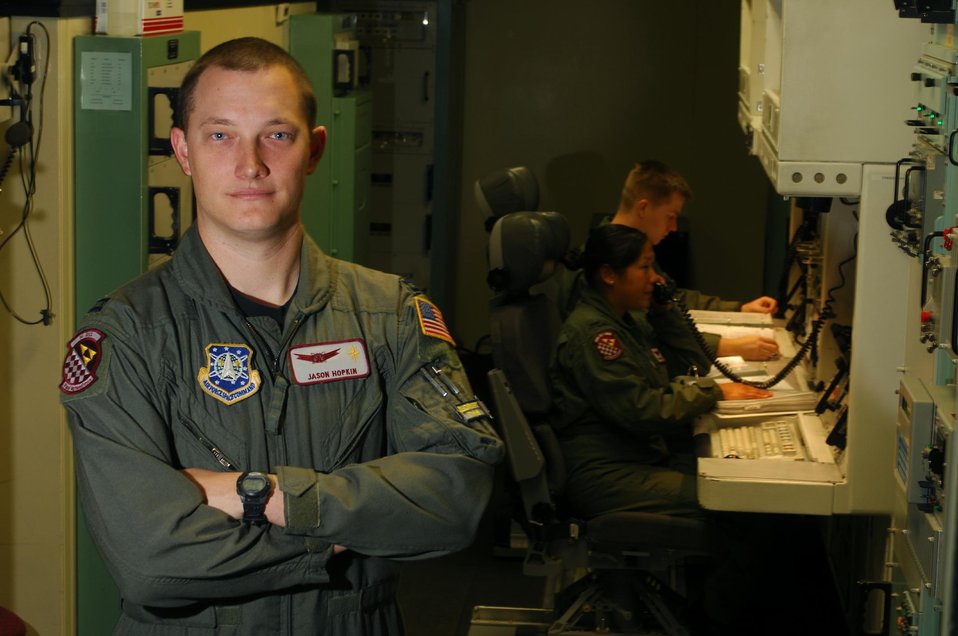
Air Force birthday

Captain Jason Hopkin observes two missile combat crew members training in a missile procedures trainer Sept. 18 at Minot Air Force Base, N.D. Captain Hopkin is space and missiles operator instructor with the 91st Operations Support Squadron. He and the 260 missile combat crew members stationed at Minot will celebrate the 59th Anniversary of the Air Force by standing alert in the 15 Missile Alert Facilities throughout the 8500 square mile North Dakota missile complex.